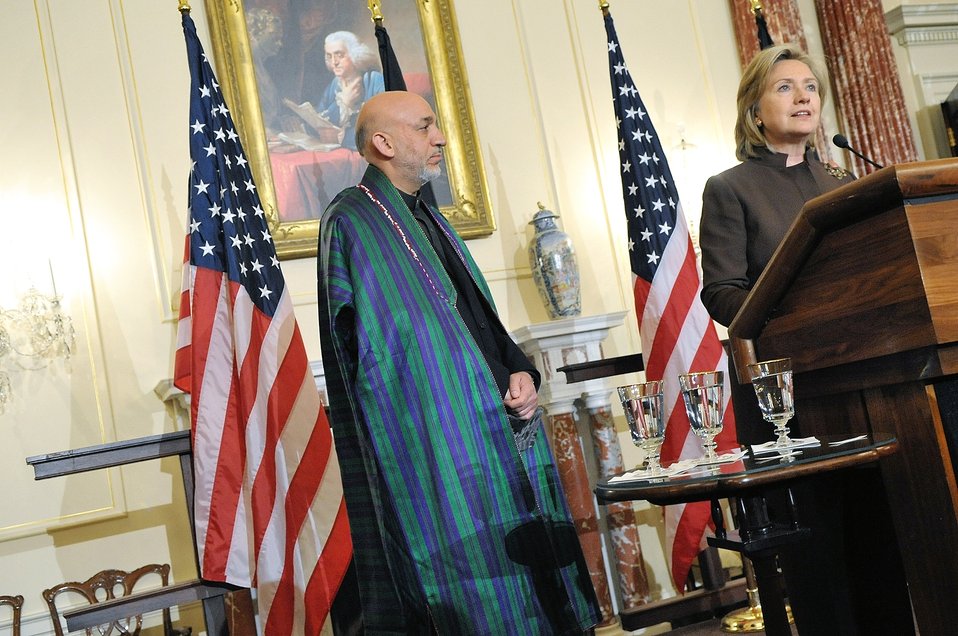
Secretary Clinton Delivers Remarks With Afghan President Karzai

U.S. Secretary of State Hillary Rodham Clinton Delivers remarks at the reception honoring President of the Islamic Republic of Afghanistan Hamid Karzai in the Ben Franklin Room at the U.S. Department of State, Washington, D.C., May 11, 2010.